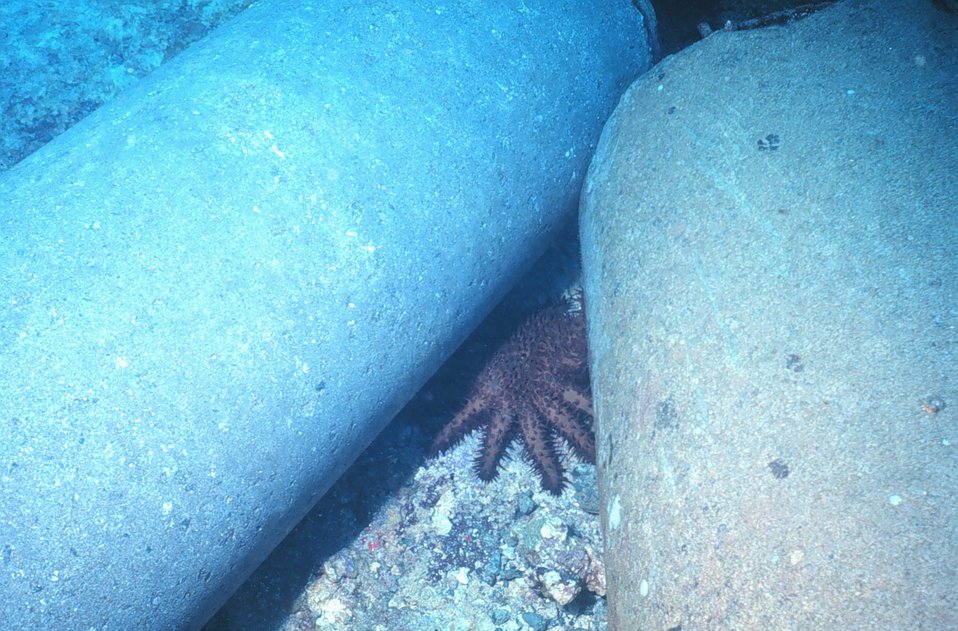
Crown of thorns starfish, Acanthaster planci, feeding on live coral adjacent to artificial reef.